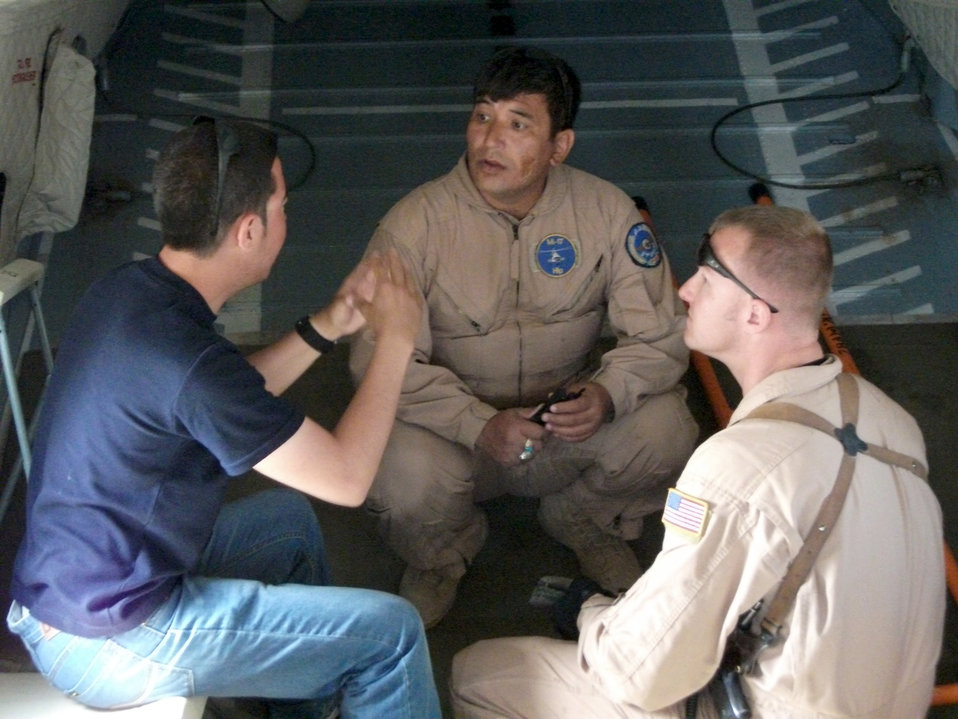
Afghan Mi17 advisers

Staff Sgt Bryan Costerisan discusses preflight procedures with Afghan air force instructor flight engineer Abdul Wahid. Seven Afghan Mi-17 instructors graduated May 4, 2011, from the first Mi-17